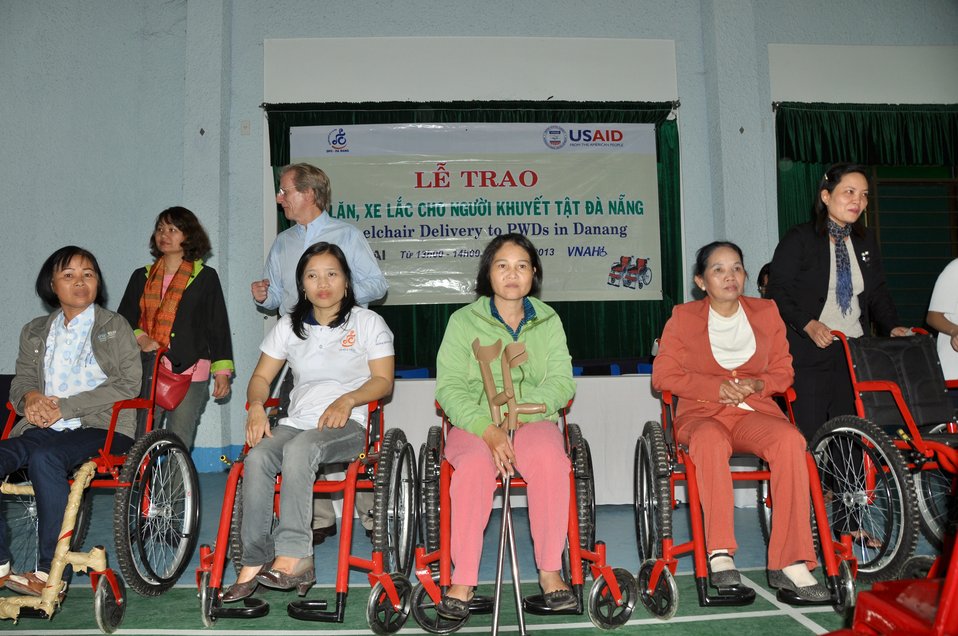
USAID supports delivery of wheelchairs to people with disabilities in Danang.

Danang, December 3, 2013.